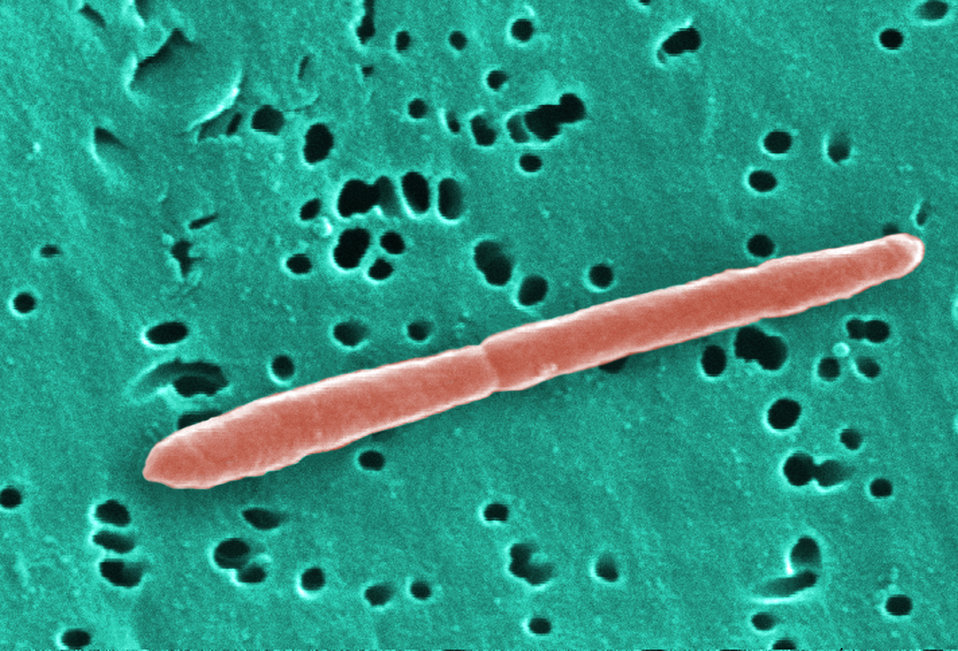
This digitally-colorized scanning electron micrograph (SEM) depicted a Gram-negative Sebaldella termitidis bacterium, which was in the process of dividing into two separate organisms.